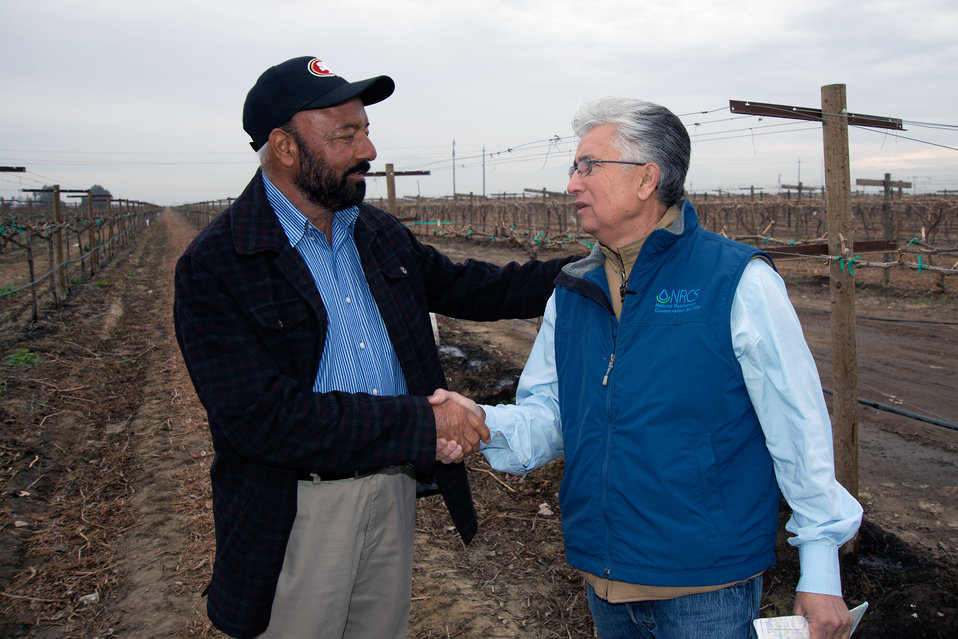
Sikander Jassar thanks retired U.S. Department of Agriculture (USDA) Natural Resource Conservation Service (NRCS) Raul Ramirez for his assistance with drought damage in the vineyard in the Lamont farming community in southeastern Joaquin Valley in Kern County, CA on Feb. 26, 2014.